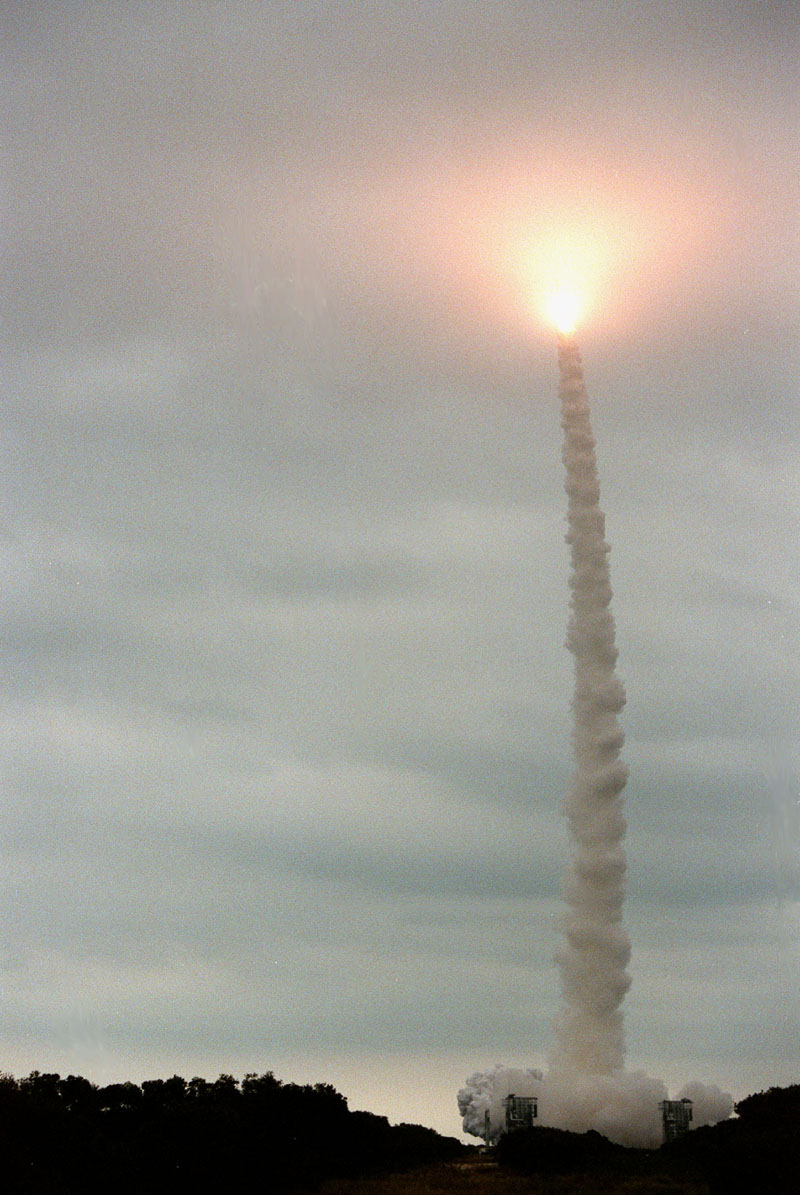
Delta II

FILE PHOTO -- Looking like a Roman candle, the exhaust from an Air Force Delta II rocket with the Mars Polar Lander aboard lights up the clouds as it hurtles skyward. The lander is a solar-powered spacecraft designed to touch down on the Martian surface near the northern-most boundary of the south polar cap. The lander will study the polar water cycle, frosts, water vapor, condensates and dust in the Martian atmosphere. It is equipped with a robotic arm to dig beneath the layered terrain. In addition, Deep Space 2 microprobes, developed by NASA's New Millennium Program, are installed on the lander's cruise stage. After crashing into the planet's surface, they will conduct two days of soil and water experiments up to 1 meter below the Martian surface, testing new technologies for future planetary descent probes. The lander is the second spacecraft to be launched in a pair of Mars Surveyor '98 missions. The first is the Mars Climate Orbiter, which was launched aboard a Delta II rocket from Launch Complex 17A on Dec. 11, 1998.